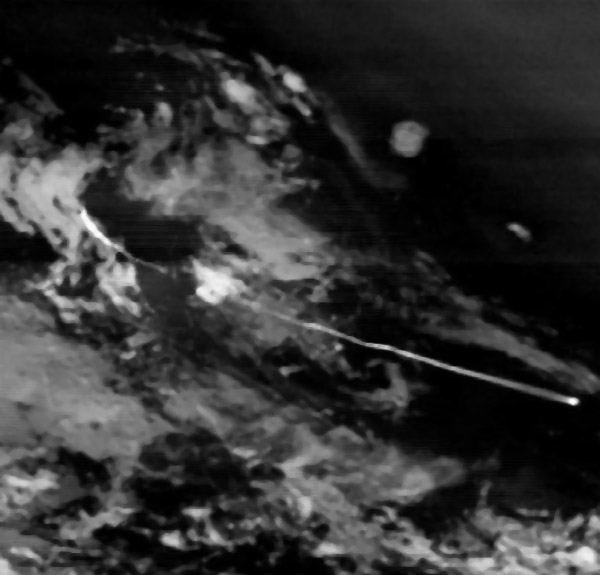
Second SBIRS payload completes early on-orbit checkout

Infrared satellite imagery from the Space Based Infrared Systems Highly Elliptical Orbit-2 sensor depicts a missile launch through the clouds.